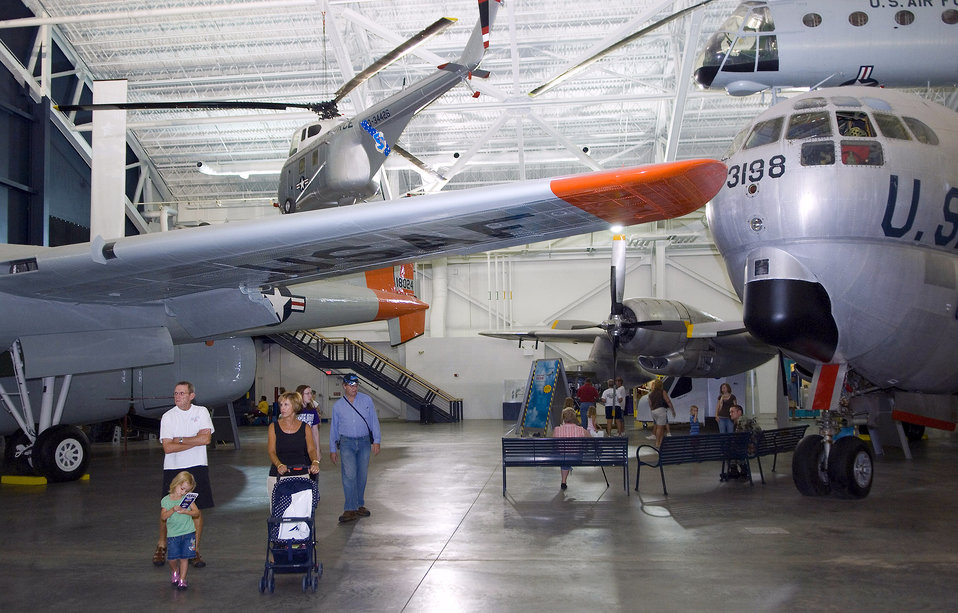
Living history

Strategic Air and Space Museum officials hosted a day dedicated to the legacy of airpower providing special Air Force demonstrations and displays for Air Force Week in the Heartland Aug. 13 in Ashland, Neb.